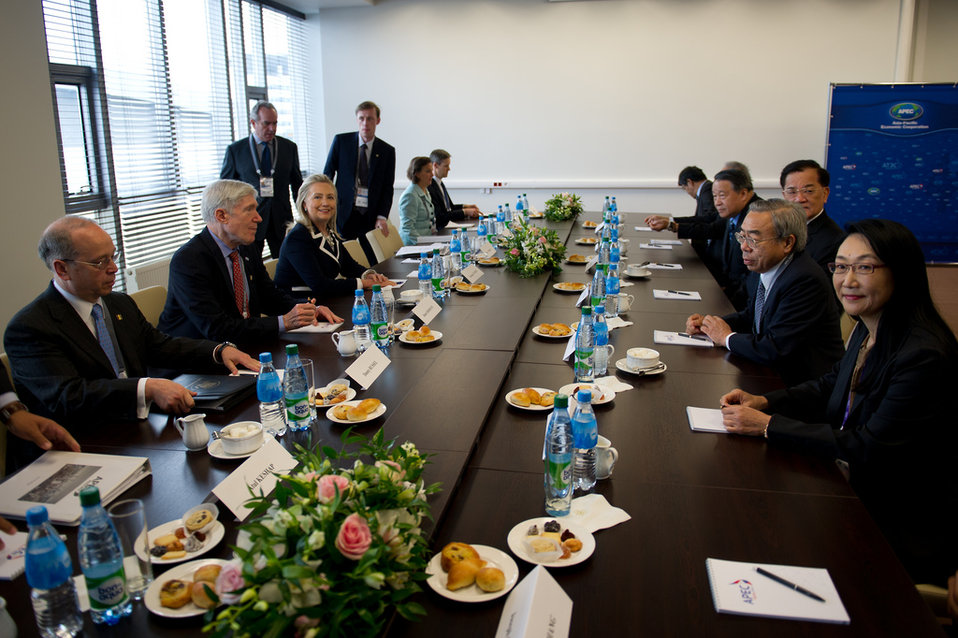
Secretary Clinton Meets With Former Vice President of Chinese Taipei

U.S. Secretary of State Hillary Rodham Clinton meets with Former Vice President of Chinese Taipei Dr. Lien Chan during the Asia-Pacific Economic Cooperation (APEC) Leaders' Week in Vladivostok, Russia, September 9, 2012.